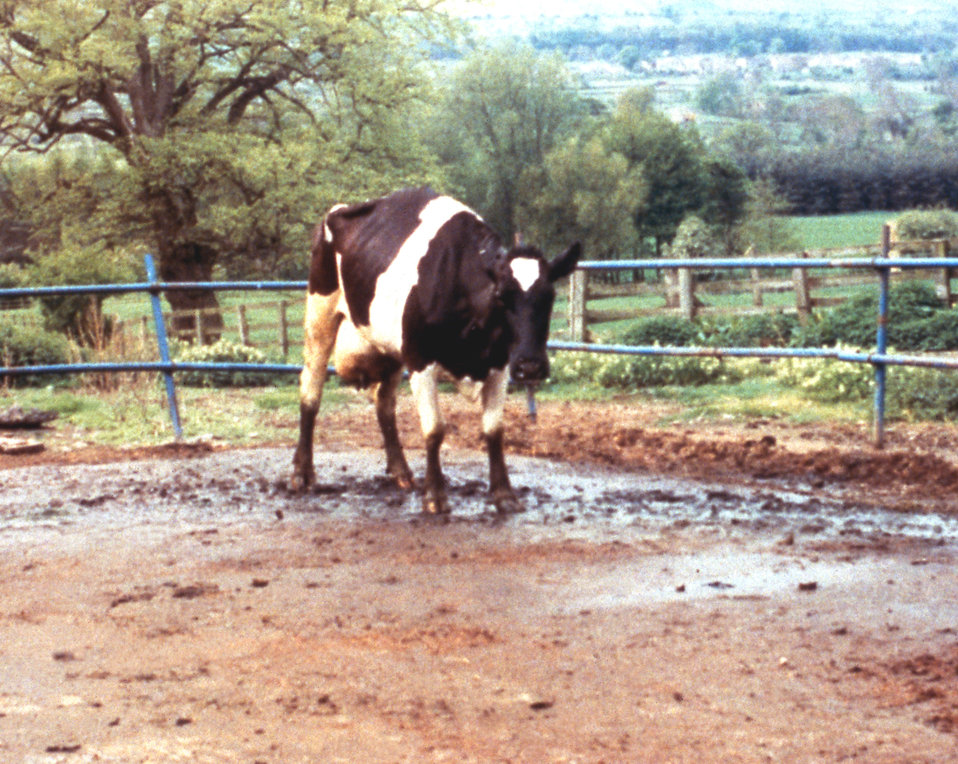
Cattle such as the one pictured here, which are affected by BSE experience progressive degeneration of the nervous system.